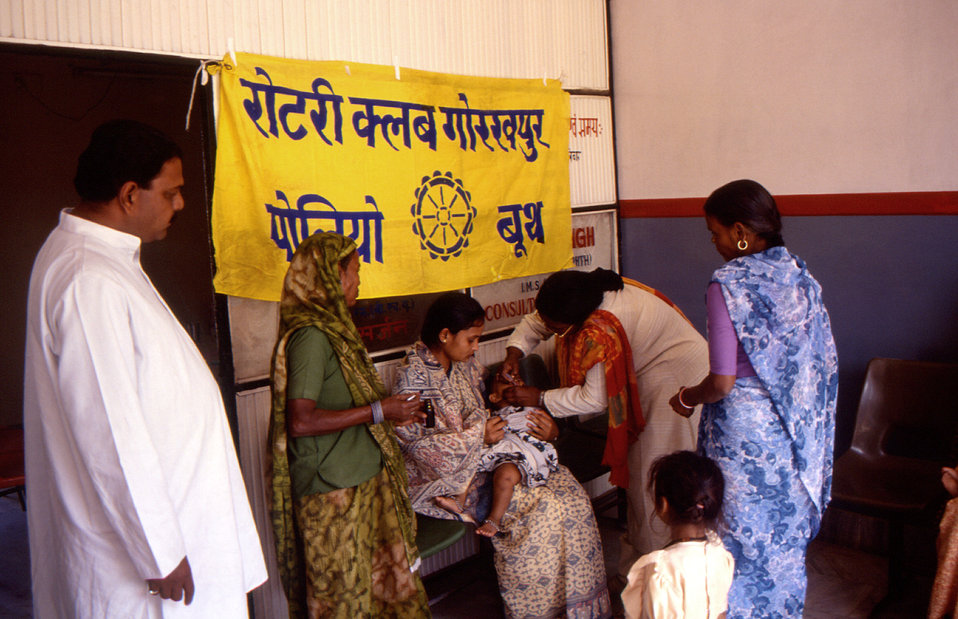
Through its PolioPlus program, the Rotary International organization is a key STOP Transmission of Polio (STOP) immunization initiative partner, in the global effort to eradicate polio. This 2000 photograph depicted a healthcare worker administering a polio vaccine to an Indian child.There are two kinds of polio vaccine: IPV, which is the shot recommended in the United States today, and a live, oral polio vaccine (OPV), which is drops that are swallowed.Until recently OPV was recommended for most children in the United States.Both vaccines give immunity to polio, but OPV is better at keeping the disease from spreading to other people. However, for a few people (about one in 2.4 million), OPV actually causes polio. Since the risk of getting polio in the United States is now extremely low, experts believe that using oral polio vaccine is no longer worth the slight risk, except in limited circumstances which your doctor can describe. The polio shot (IPV) does not cause polio.